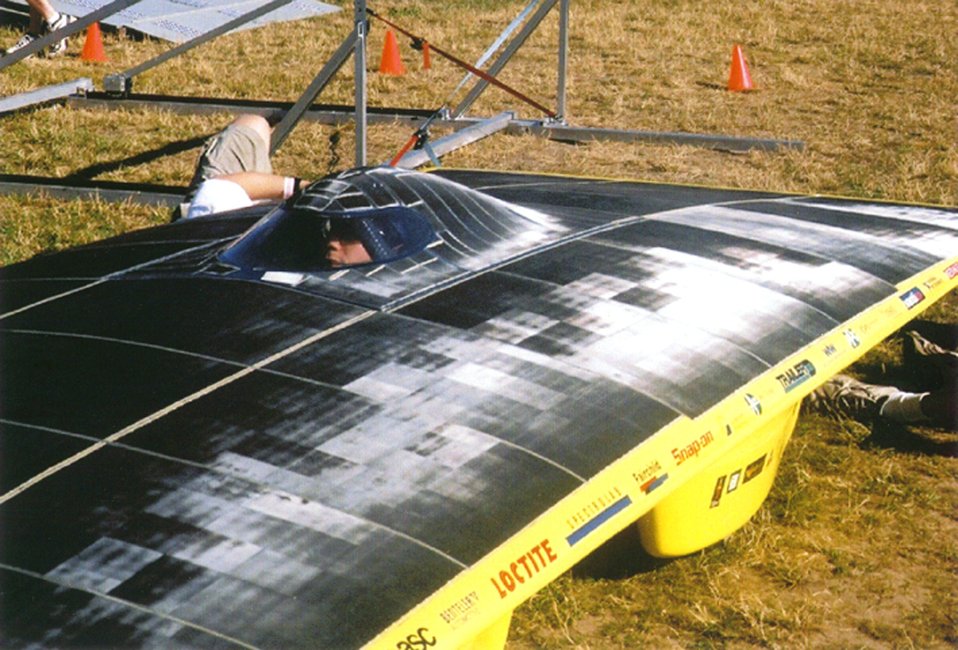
UNIVERSITY OF MICHIGAN'S POWERFUL GALIUM ARSENIDE SOLAR ARRAY 1200 WATTS.

THE AMERICAN SOLAR CHALLENGE (SUNRAYCE) 2001, THE LONGEST SOLAR CAR RACE IN THE WORLD, IS A BIENNIAL EDUCATIONAL SPORTING EVENT IN WHICH UNIVERSITY TEAMS, COMPANIES, AND CLUBS FROM AROUND THE WORLD COMPETE TO BUILD AND RACE SOLAR POWERED CARS ACROSS THE UNITED STATES. THIS YEAR THE RACE BEGAN IN CHICAGO, ILLINOIS ON JULY 15, 2001 AND WAS COMPLETED ON JULY 25, 2001 IN CLAREMONT, CALIFORNIA, TRAVELING ALL ALONG OLD ROUTE 66.